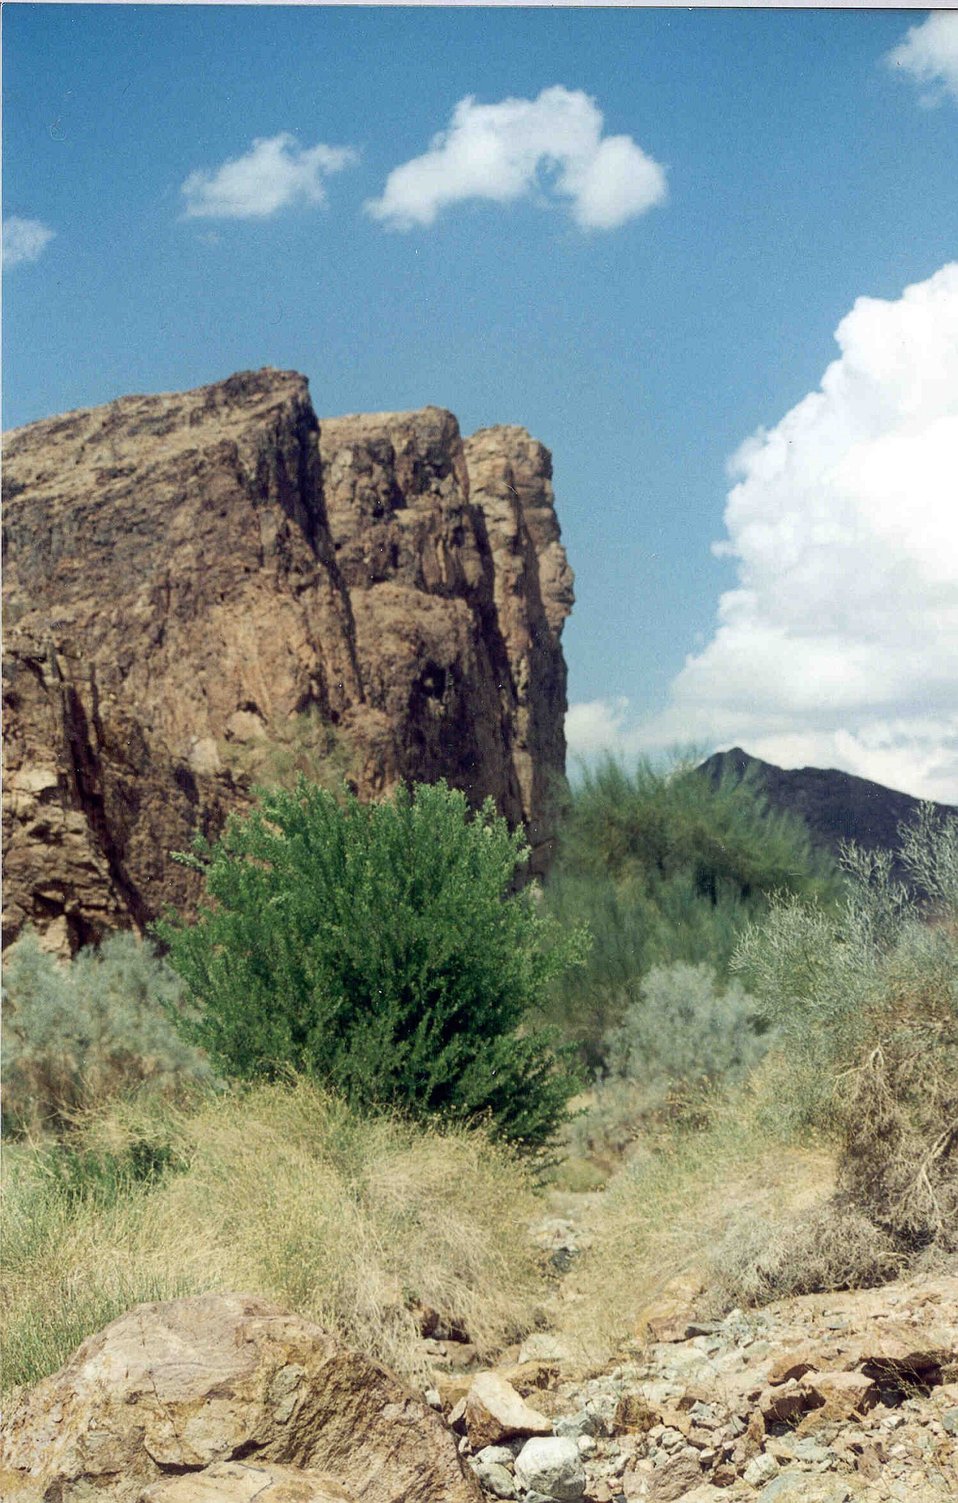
Morgan Peak in the Muggins Wilderness Area